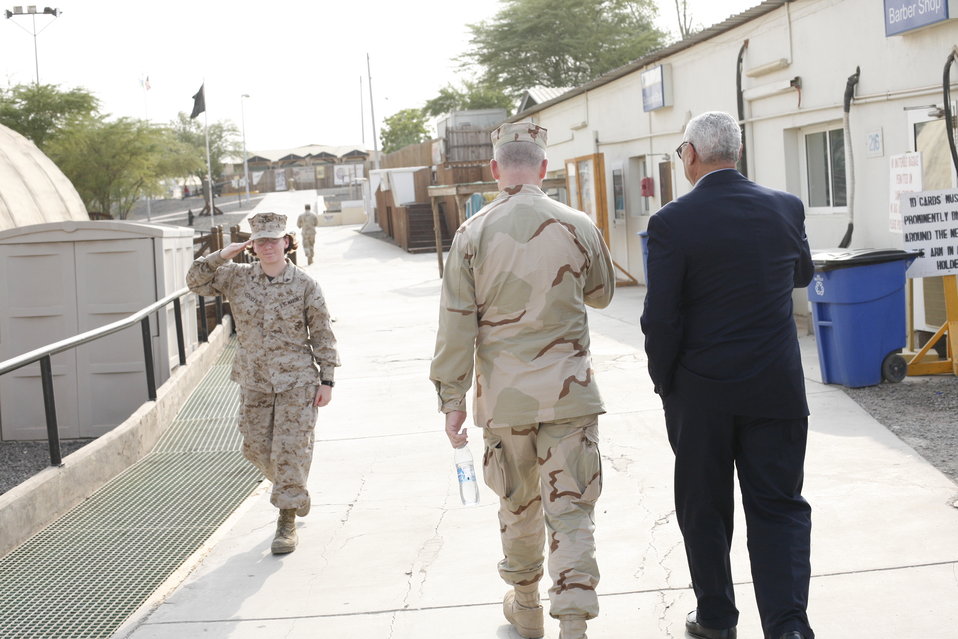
Former Secretary Powell Visits Soldiers in Djibouti

Former Secretary of State Colin Powell visits soldiers at Camp Lemonnier in Djibouti on July 8, 2011.